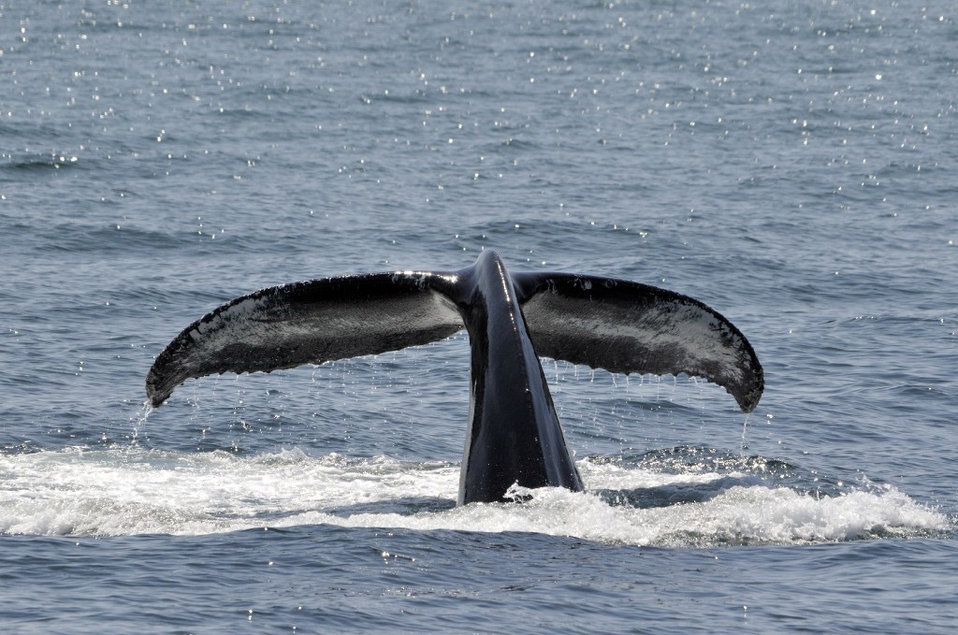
Photo of the Week - Humpback Whale (MA)

Photo of the Week - 4/23/12

Humpback Whale photographed during a wale-watching tour out of Provincetown, MA.